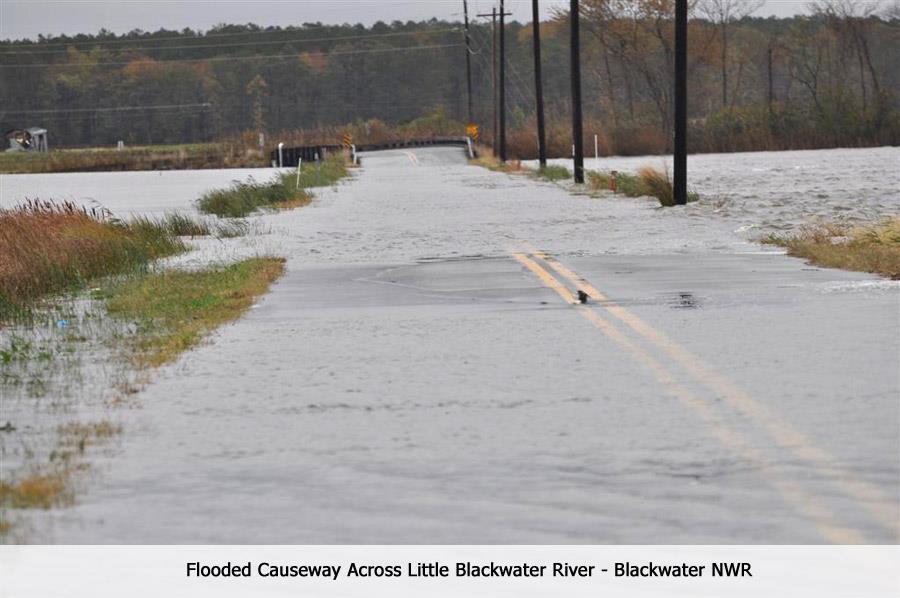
Blackwater National Wildlife Refuge after Hurricane Sandy (MD)

Flooded causeway across Little Blackwater River.